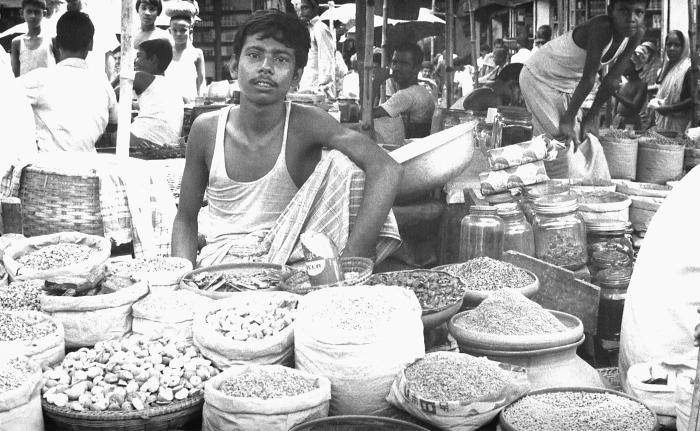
This photograph depicted a common Bangladesh market scenario with a young man seated in the foreground selling his cache of locally grown produce. This image was part of a series provided by Dr. Stan Foster, and captured by Pierre Claquin, M.D., B.A.C., who at the time was a member of the World Health Organization's Smallpox Eradication Program. It was part of a series photographed by former E.I.S. officer, Stanley O. Foster M.D., M.P.H., and was one of a series entitled 'The Story of One Smallpox Jeep', which depicted the travails faced by the jeep, and its occupants of public health practitioners, as they road through the Bangladesh countryside in an attempt to eradicate smallpox from the country.